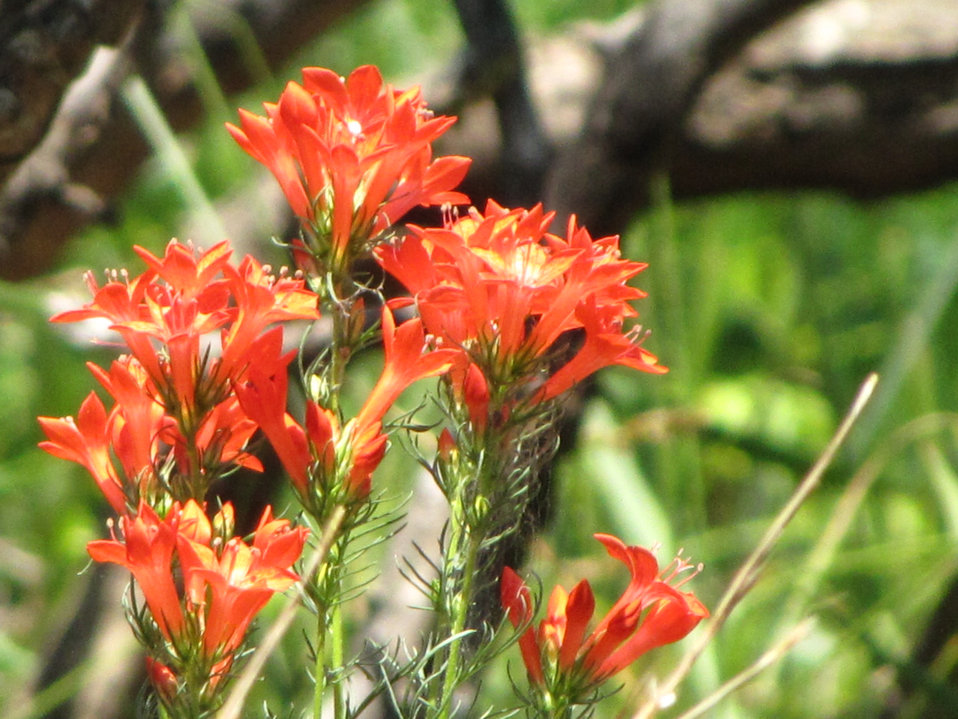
Standing Cypress Gilia rubra

Wichita Mountains Wildlife Refuge.